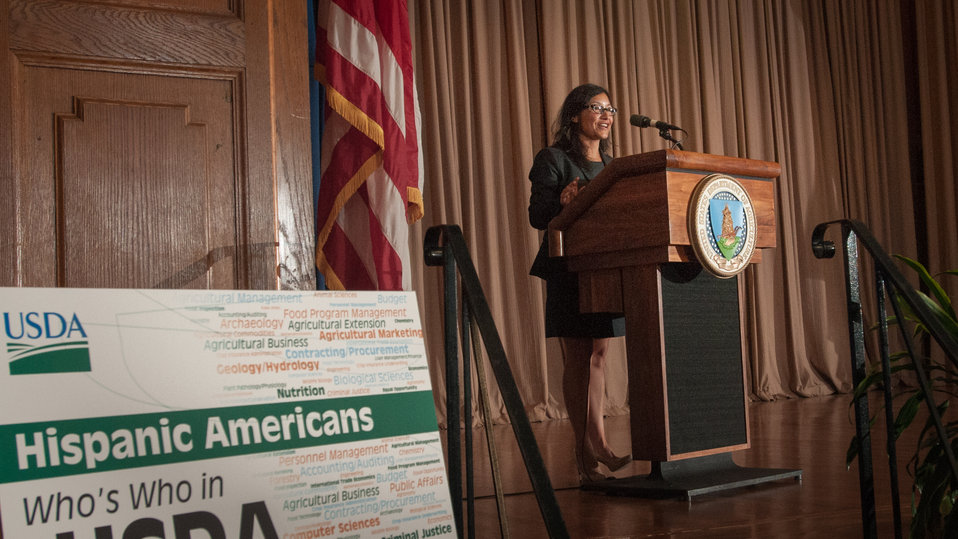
White House Office of Public Engagement Associate Director Julie Chavez Rodriguez speaking during the U.S. Department of Agriculture (USDA) 2013 National Hispanic Heritage Month ”Hispanics: Serving and Leading our Nation with Pride and Honor,” on Thursday, Sept. 19, 2013, in the Jefferson Auditorium, USDA Headquarters, Washington, D.C.